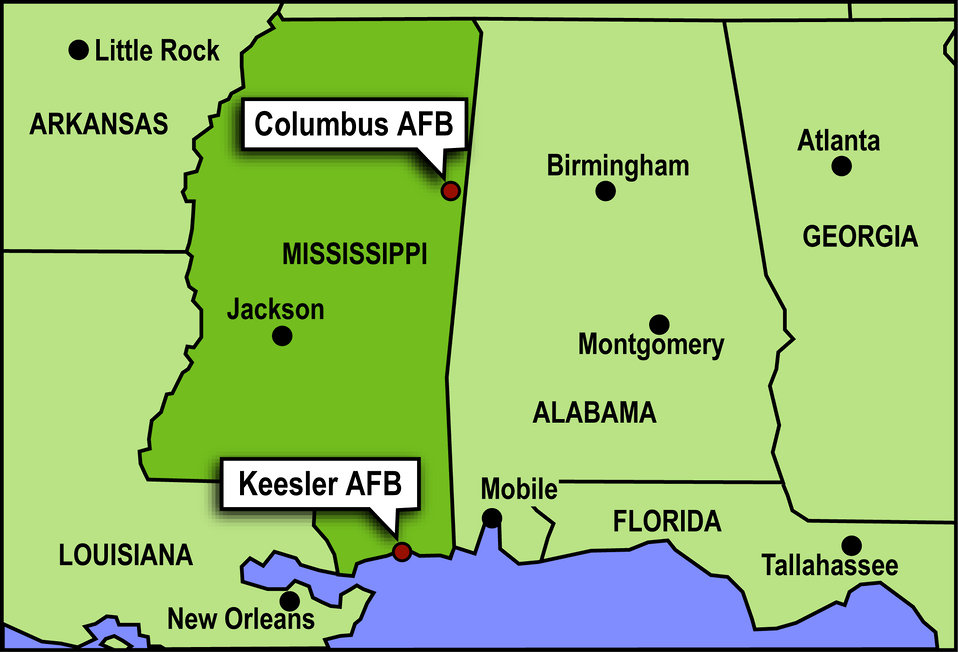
Keesler, Columbus survive Hurricane Katrina

GRAPHIC -- Keesler and Columbus Air Force bases in Mississippi survived Hurricane Katrina. Base officials are still evaluating the damge to Columbus, but so far have reported only moderate damage to one building. Keesler, however, has suffered extensive damge to industrial and housing areas.